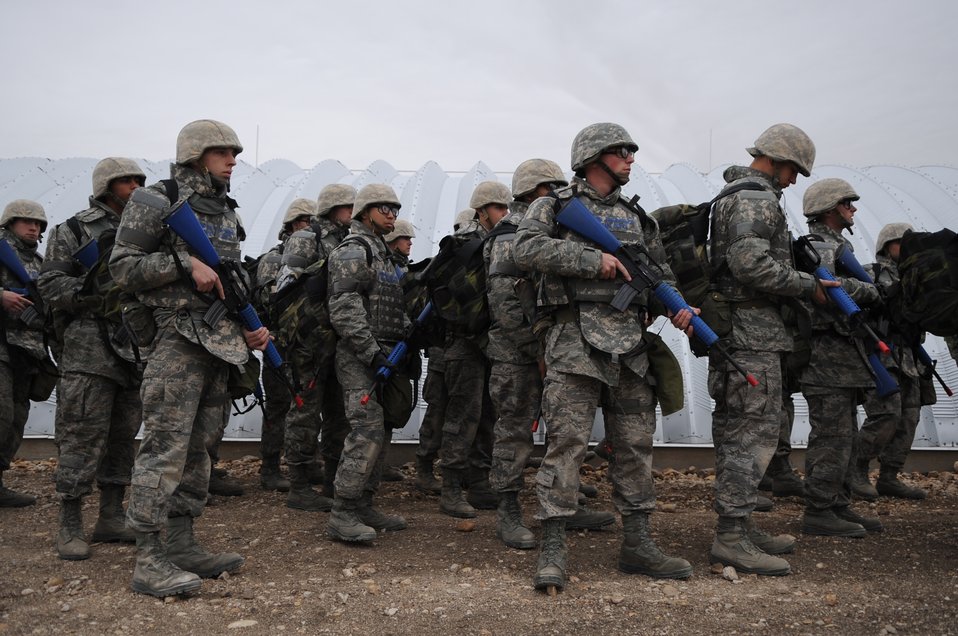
Trainees slew the BEAST in new basic training program

Airmen Basic trainees in body armor wait their turn to go through an unexploded ordnance disposal training lesson during the five-day deployment exercise called the Basic Expeditionary Airman Skills and Training, or BEAST, which kicked off Dec. 15 at Lackland Air Force Base, Texas. The BEAST is the newly built complex added into the extended, 8.5-week Basic Military Training curriculum that began Nov. 5.